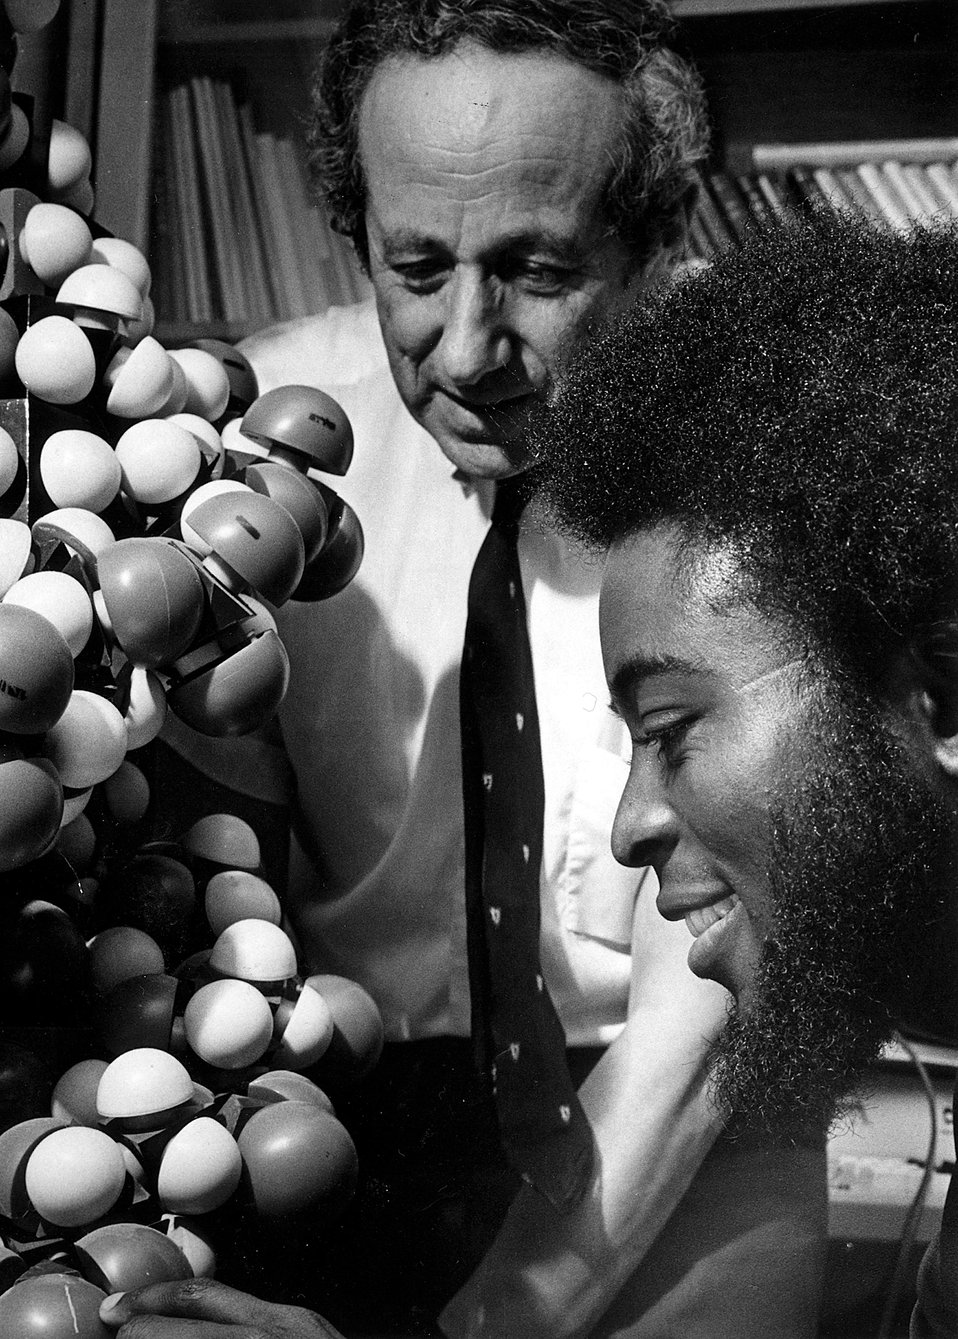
DNA model is explained to student by a member of the Brookhaven National Lab's medical dept.
June 21, 1974